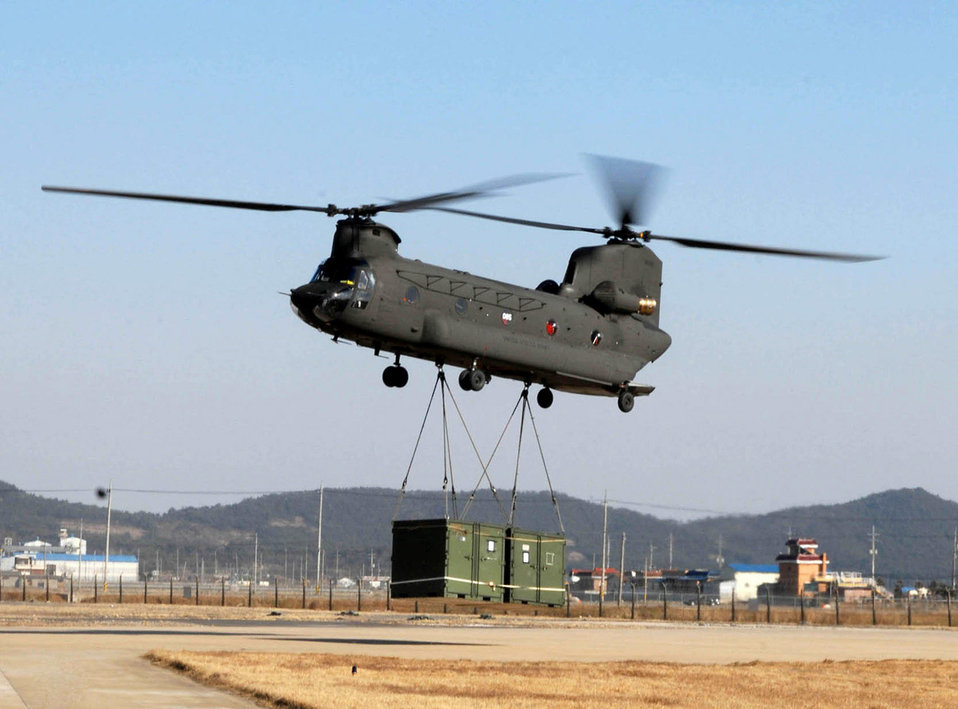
Korea Air Component Comand commander holds 6 ACCES

A CH-47 Chinook helicopter drops off troops, vehicles and additional supplies March 1 at Kunsan Air Base, South Korea. The Chinook arrived from Camp Humphrey's, Bravo Company 4-2, as part of the Key Resolve/Foal Eagle Exercise, enhancing combat readiness and joint interoperability.